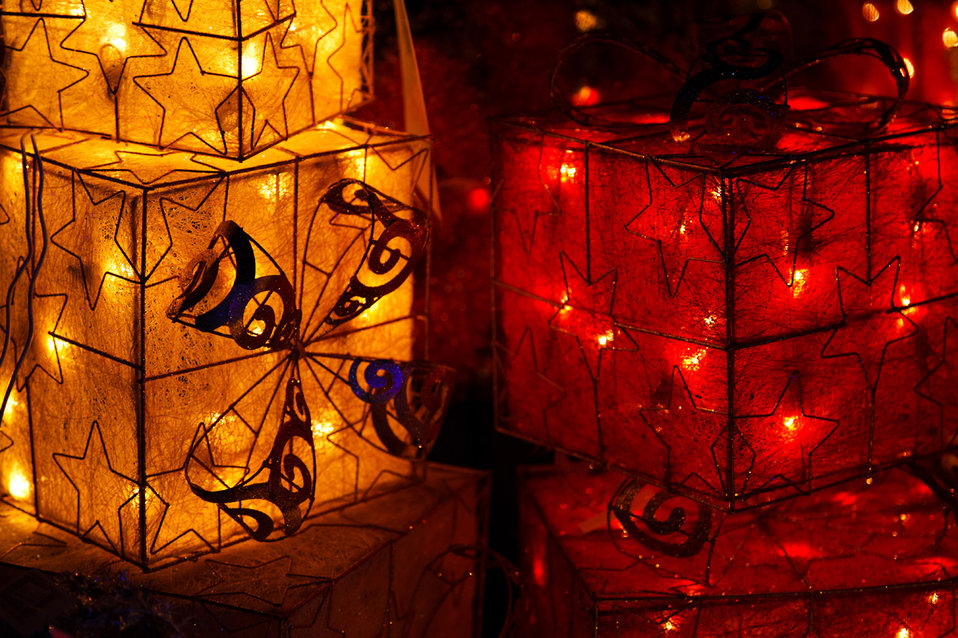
Christmas boxes

Yellow and red lit christmas boxes.